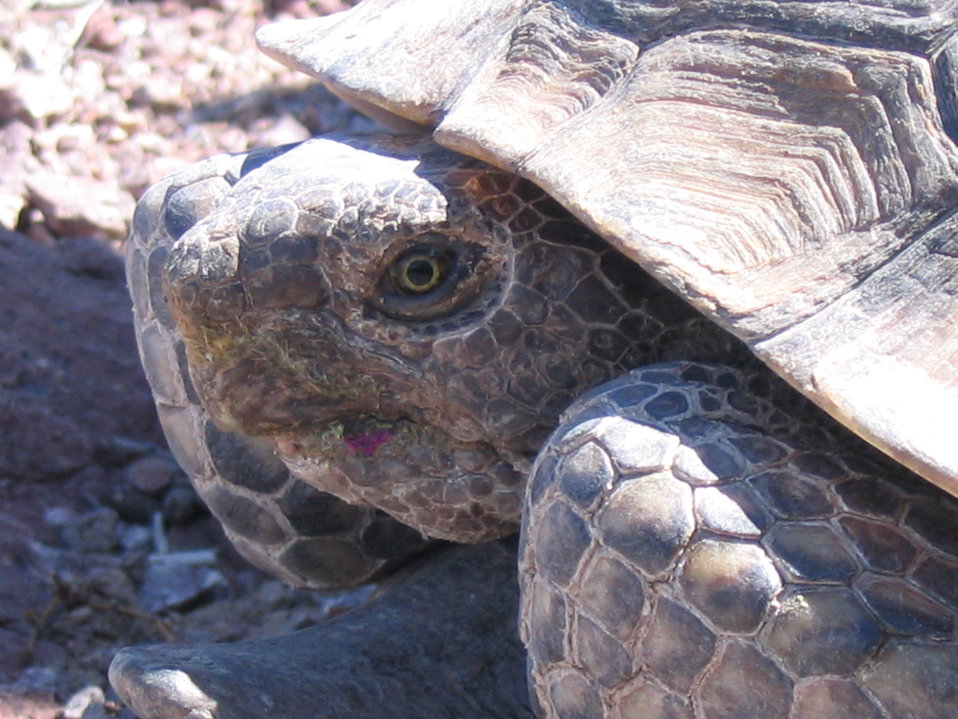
Mojave Desert Tortoise

The U. S. Fish and Wildlife Service has announced the availability of a Revised Recovery Plan for the threatened Mojave population of the desert tortoise (Gopherus agassizii) under the Endangered Species Act (ESA). The Plan takes a new approach to reversing declines in Mojave desert tortoise populations through a coordinated effort of science-based implementation and evaluation of conservation actions.

Unlike the previous Recovery Plan, which focused on mitigation measures, this Plan recognizes the need to adjust to the accelerating pace of environmental change and its impact on key resource management issues, such as corridors and connectivity. The Plan will be a living document that advances a natural resource management model where ongoing detection of changes and attribution of causes will provide the basic information on whether or not the desert tortoise or its ecosystem is changing beyond natural variability.

By continuous examination of vulnerability, exposure, sensitivity, and adaptive capacity of the desert tortoise to environmental change, resource managers will be able to update the Plan as it is being implemented with conservation measures that will help the desert tortoise recover.